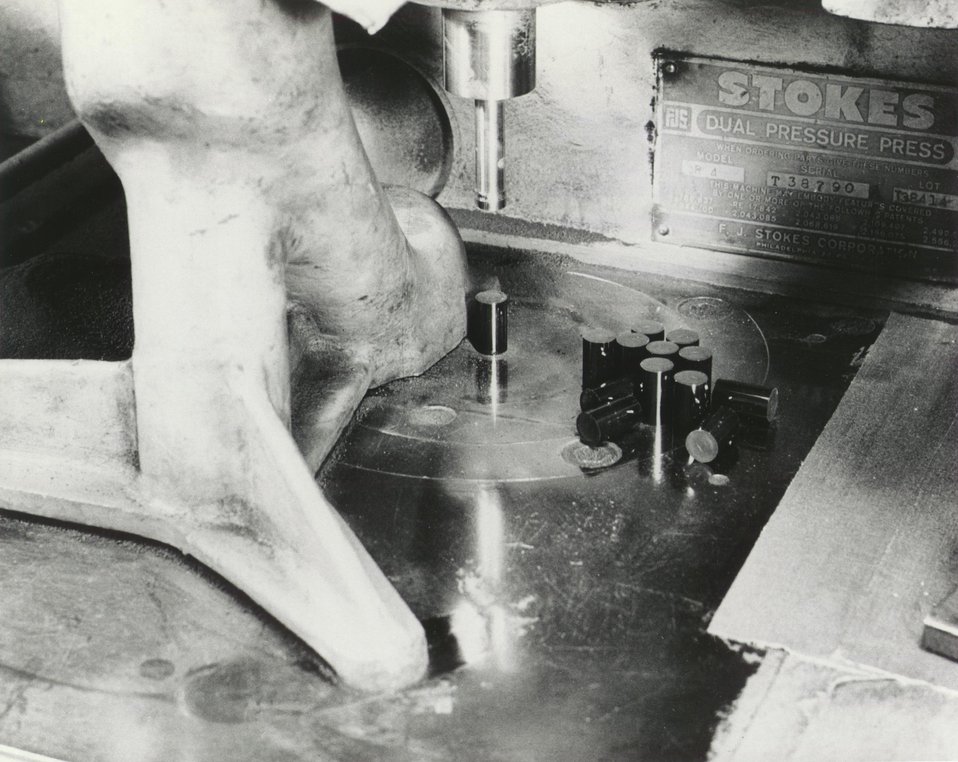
Close-up view of one of the principal steps in fabrication of fuel elements for water-cooled reactors. c. 1964